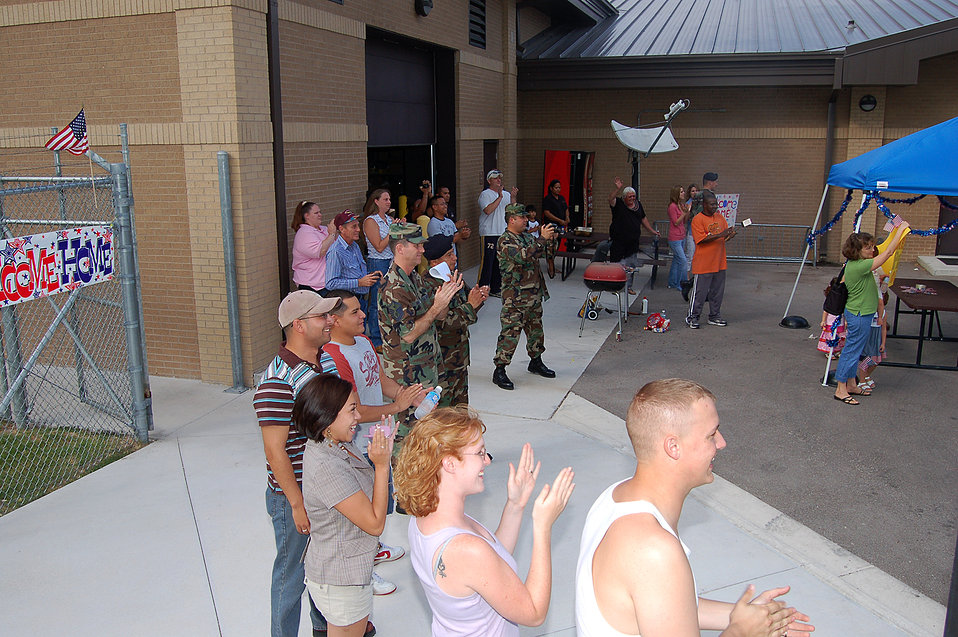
OIF return

Friends, family and 47th Security Forces Squadron members cheer at the arrival of 13 Airmen returning to Laughlin Air Force Base, Texas Aug. 29 after a nine-month deployment in support of Operation Iraqi Freedom.